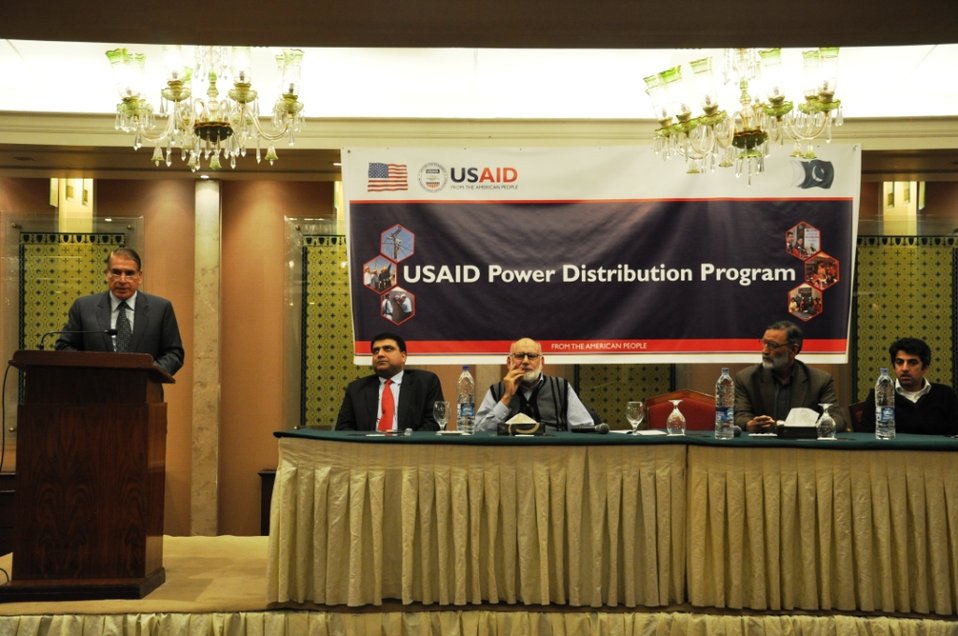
Certificate distribution ceremony of IESCO's Westridge division staff for New meter reading training

Islamabad, November 30, 2011 - USAID Power Distribution Program carried out a roll out workshop for initiating the new commercial procedure for the December 2011 billing cycle. Mr. Javed Pervaz CEO IESCO chaired the workshop, and addressed the Division staff, specifically focusing on the meter readers, and encouraging them to help make the Westridge Pilot a success.